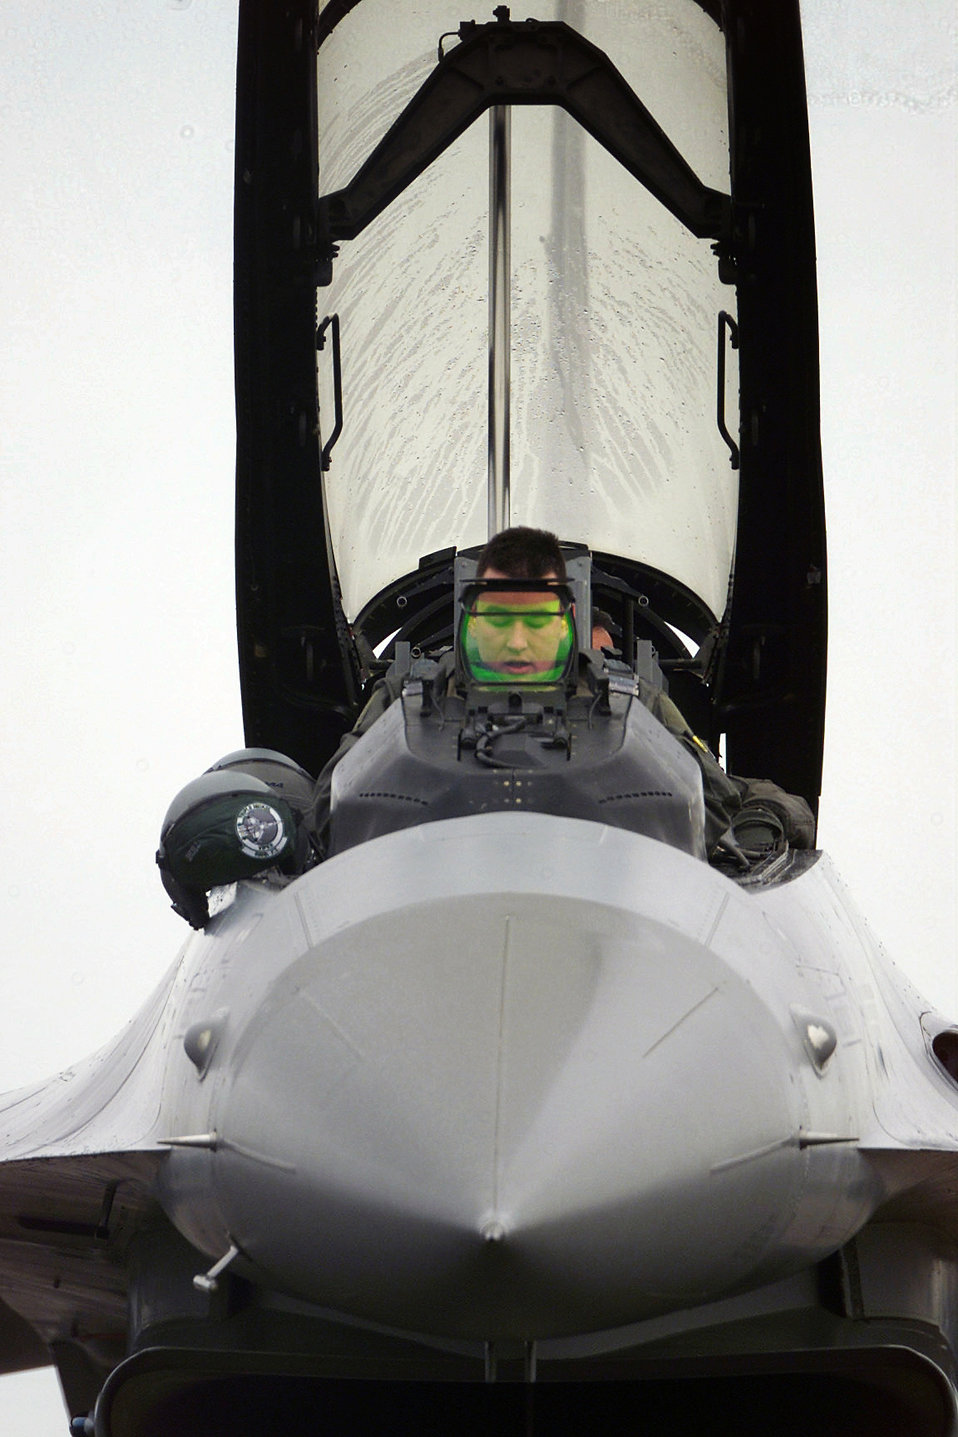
African Eagle

SIDI SLIMANE AIR BASE -- An F-16 Fighting Falcon pilot from the 555th Fighter Squadron, Aviano Air Base, Italy gets ready to launch. One hundred sixty people deployed to Morocco in support of African Eagle exercise. African Eagle a bi-annual exercise designed to practice dissimilar air-to-air training with the Royal Moroccan air force.